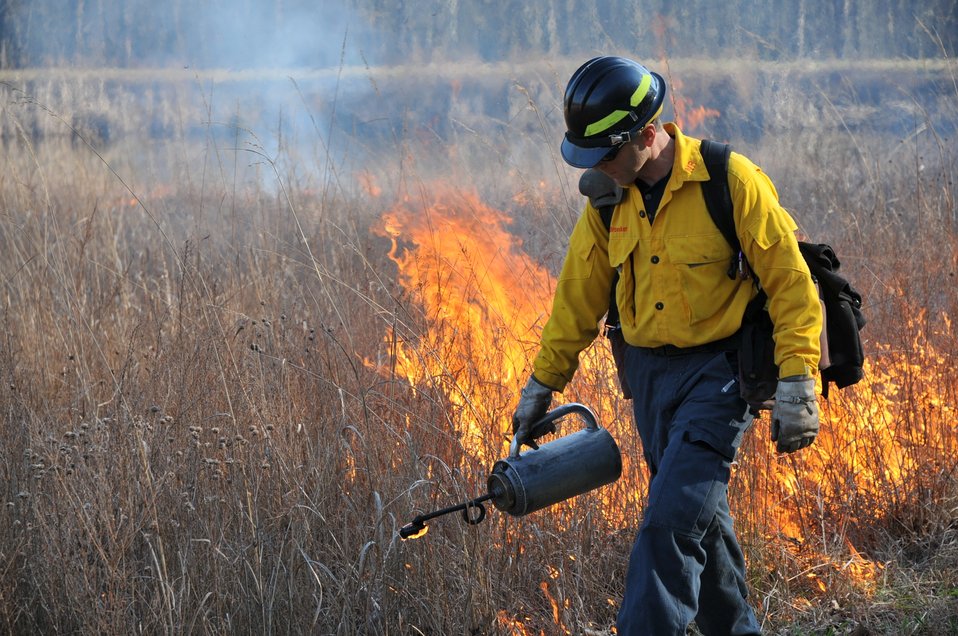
Successful controlled burn at Portsmouth

A firefighter uses a drip torch, a can of fuel with a flame-carrying torch head at the spout, to ignite the fire.
***
Portsmouth Gaseous Diffusion Plant firefighters recently completed a prescribed fire, or controlled burn, of an 18-acre prairie at the site, two weeks ahead of a regulatory deadline.
“Burning the prairie in a controlled manner stimulates the germination of prairie grasses and reduces the invasion of woody plants to maintain a healthy prairie ecosystem,” said DOE Site Director Vince Adams.
The prairie ecosystem was the result of remediation of former lime sludge lagoons that settled out waste lime from the plant’s water treatment plant.